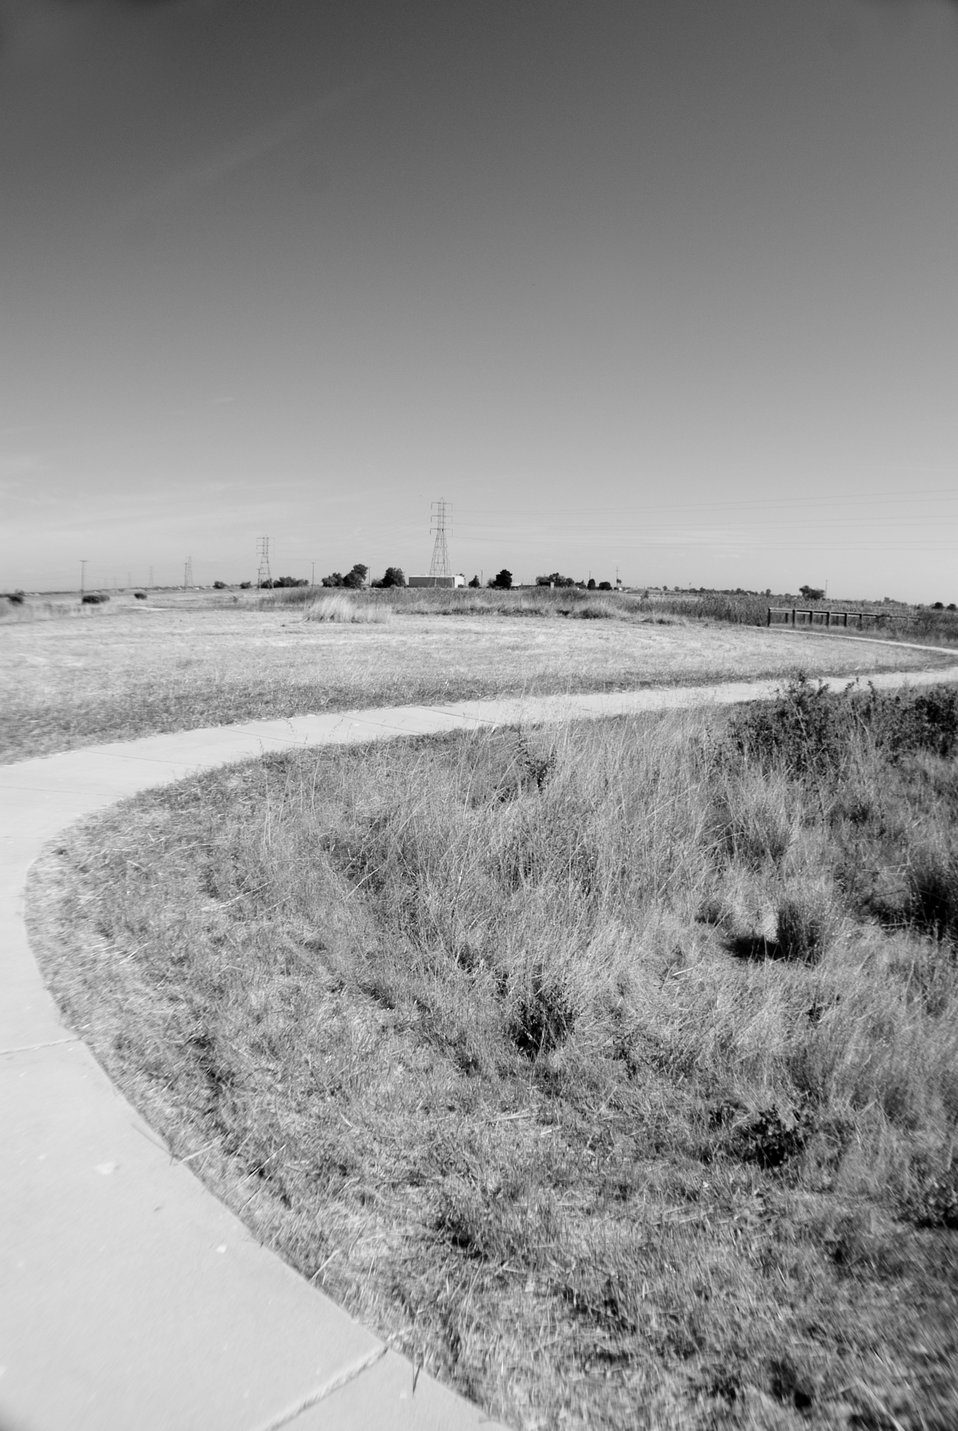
Stone Lakes NWR 03

Blue Heron Trail, built with American Recovery and Reinvestmant Act funds in 2010.